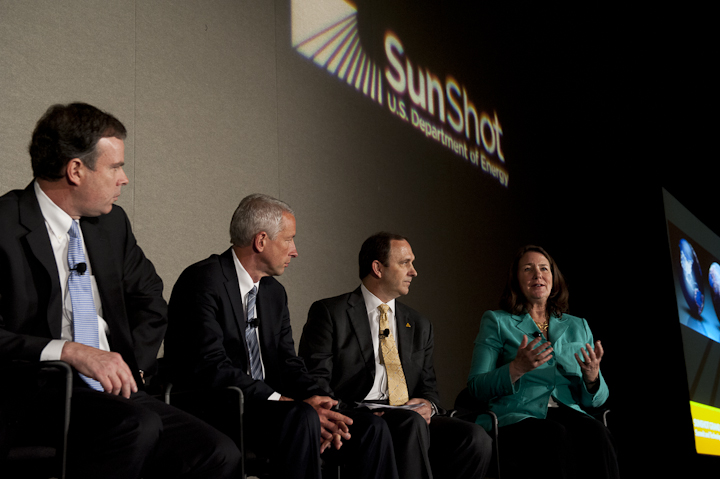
SunShot Panel

June 13, 2012- Members of the Global Competitiveness Panel speak the plenary session of the SunShot Grand Challenge Summit and Technology Forum in Denver, Colorado.